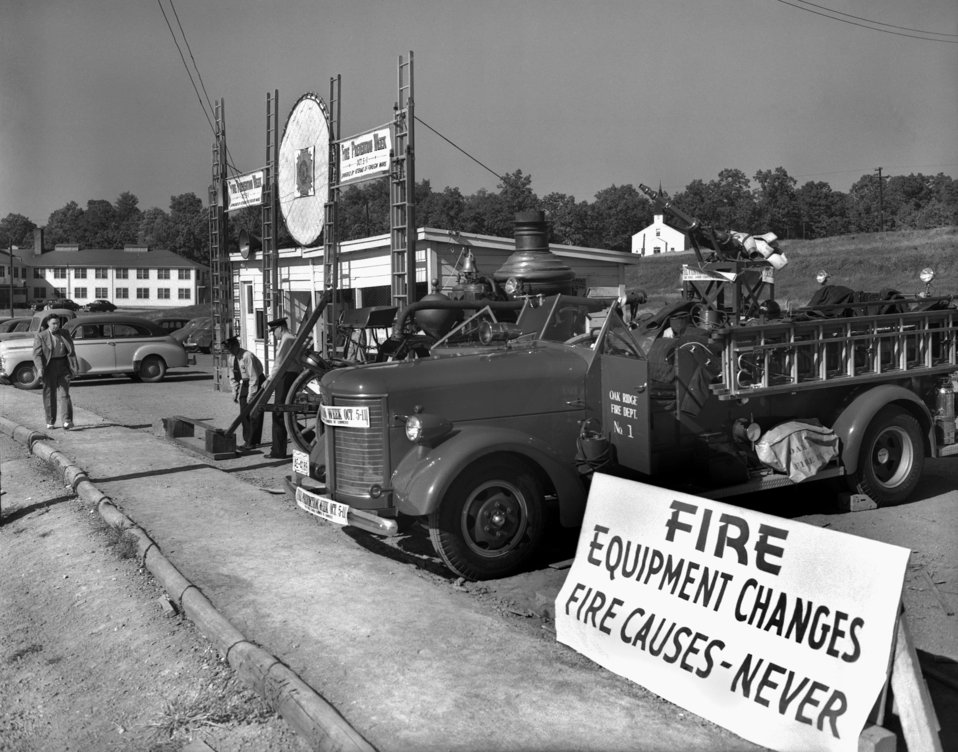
Fire Prevention Week Display of Fire Equipment Oak Ridge

DOE Photo by Ed Westcott

Oak Ridge Tennessee 10/6/1947